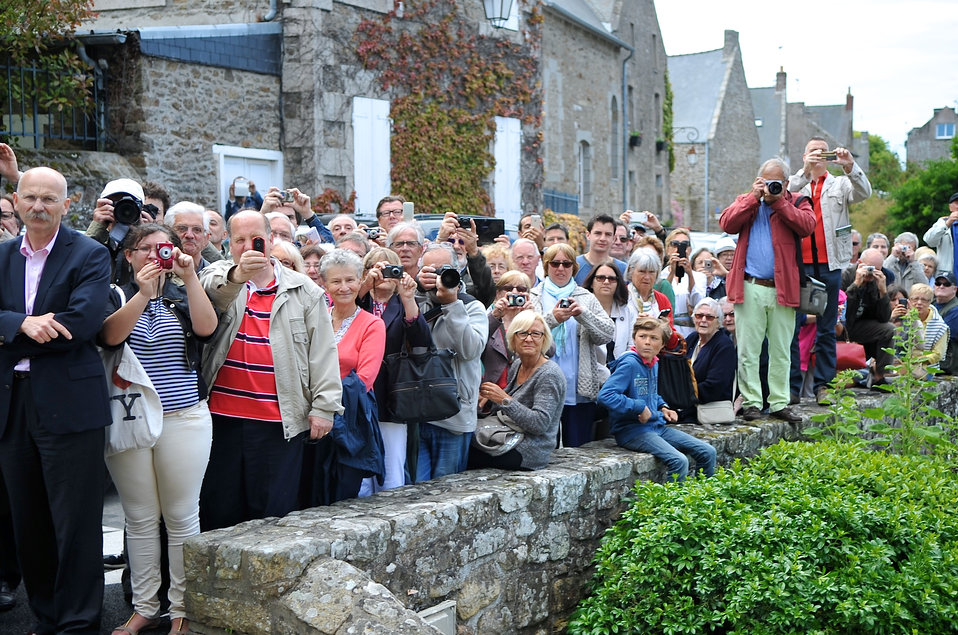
Brittany Residents Await Secretary Kerry Before Commemorative WWII Ceremony

Residents of Saint Briac, France, await U.S. Secretary of State John Kerry as he arrives on June 7, 2014, to commemorate the 70th anniversary of D-Day and to thank local residents for saving the remnants of his family home after the Nazis destroyed it as American liberators approached.